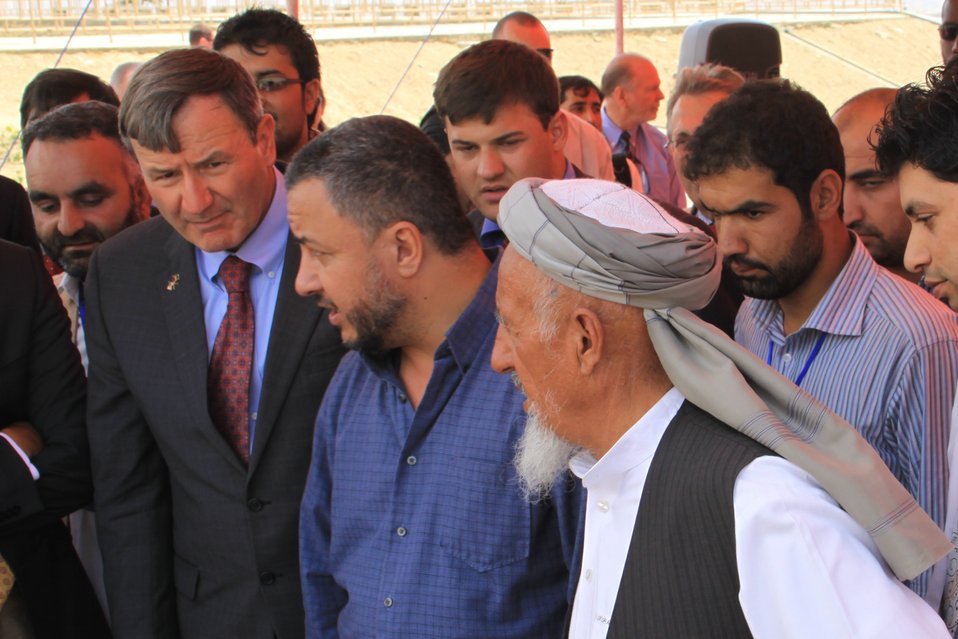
Badam Bagh Farm